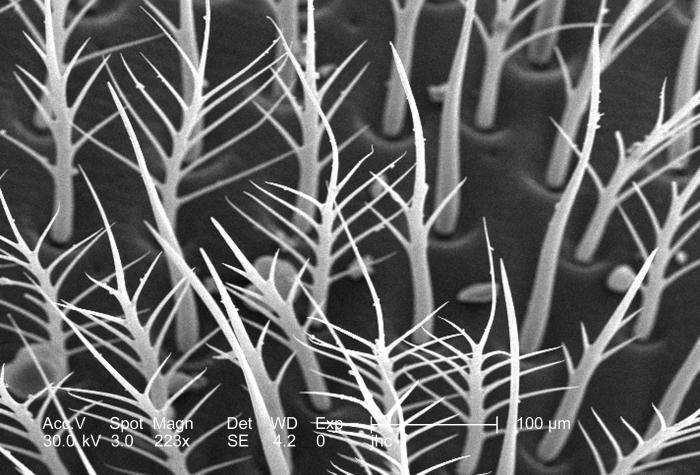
At a relatively low magnification of 223x, this scanning electron micrograph (SEM) depicted what appeared to be an arboreal field of small trees, but what were actually chitinous extensions from the exoskeletal surface of an unidentified green-colored insect found deceased on the suburban grounds in Decatur, Georgia. Known as "setae", these sensorial hair-like structures act to provide this arthropod, i.e., organism with jointed-legs, from the Greek arthr-, joint, and Greek pod-, foot, with information about its environment including changes in temperature, wind direction, and chemistry.